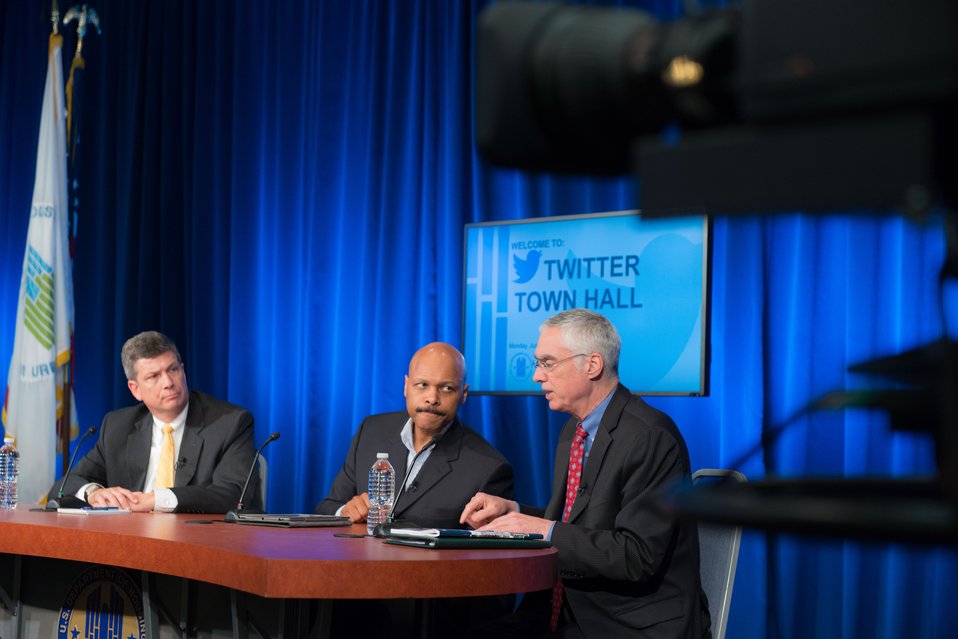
Answering Questions at the Twitter Town Hall

EPA Acting Administrator Bob Perciasepe emphasizes the importance of healthy, resilient communities.
USEPA Photo by Eric Vance. Public domain image